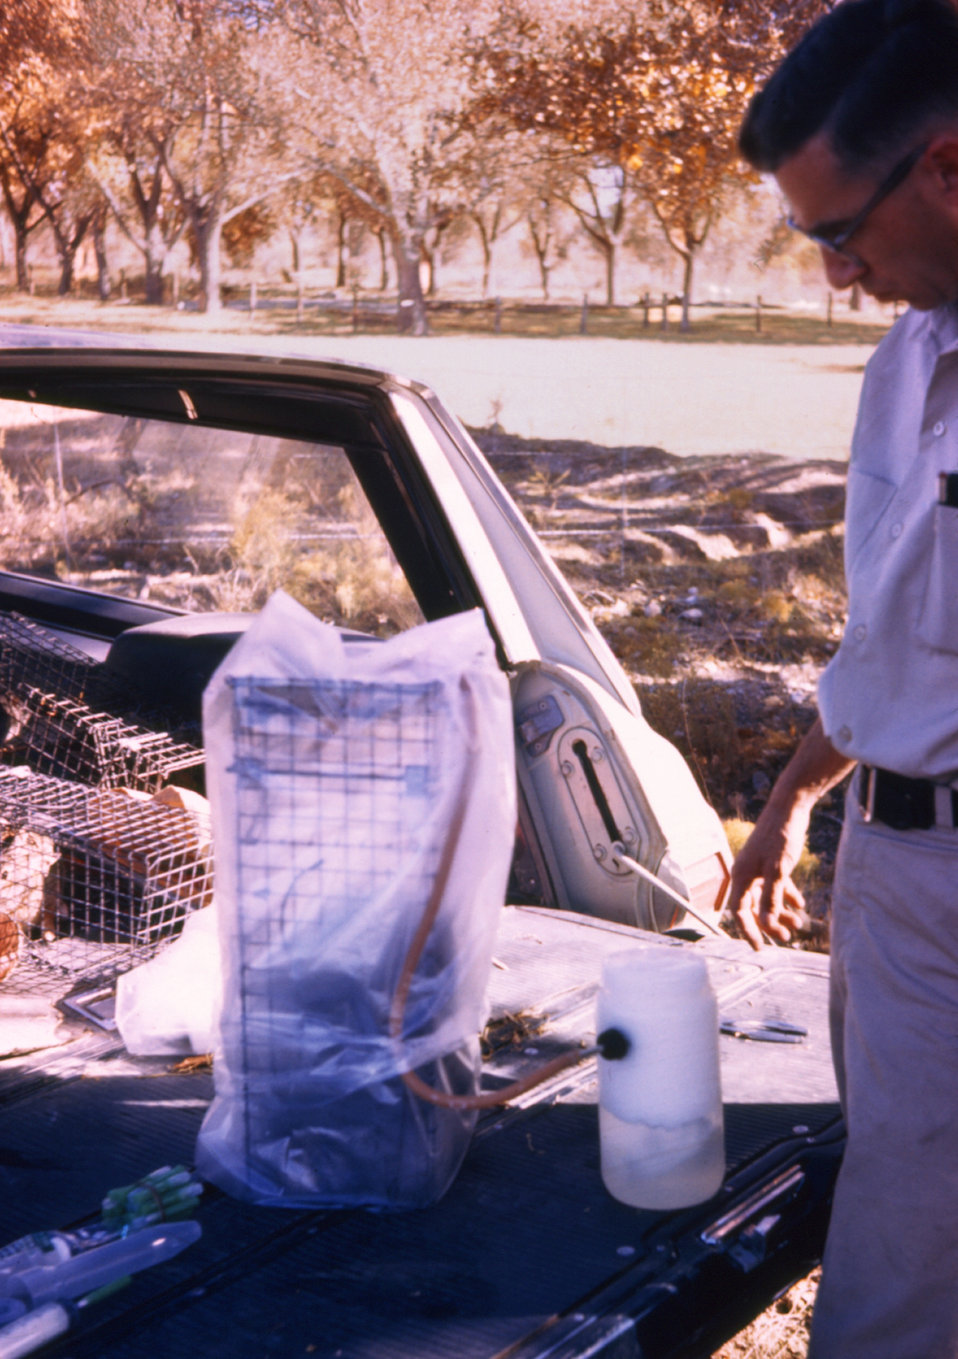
Here a field clinician is adding CO2 to anesthetize an animal during a 1974 arbovirus field study.